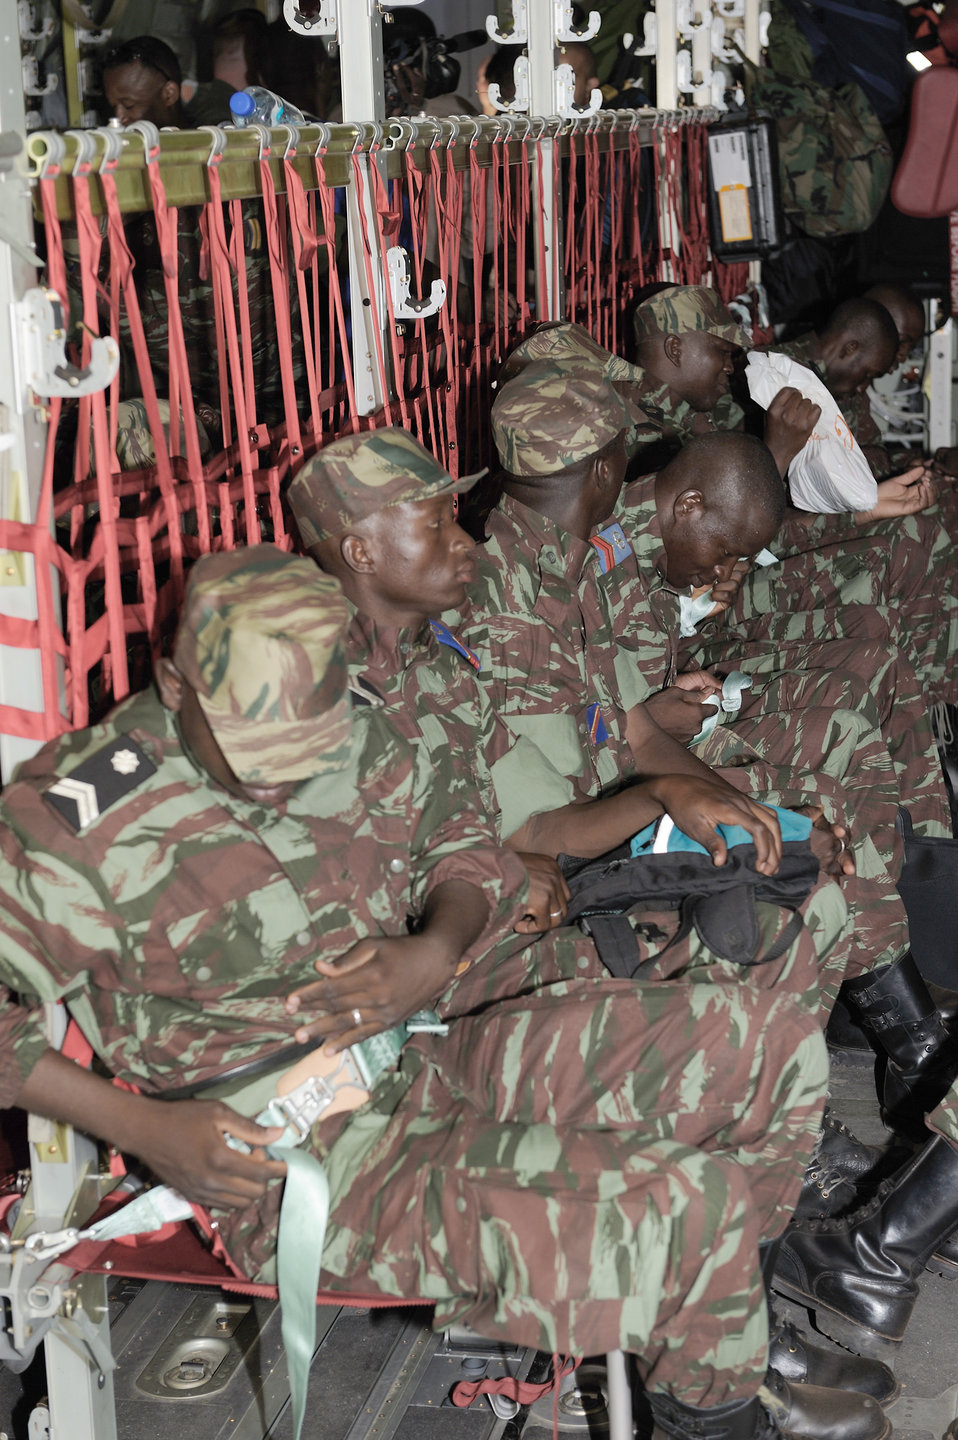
Airmen support Air Forces Africa in exercise

Burkinabe army soldiers buckle themselves into a C-130J Super Hercules to begin their deployment to Mali in support of Exercise Flintlock 10 May 1, 2010, in Ouagadougou, Burkina Faso. The C130-J is deployed from Ramstein Air Base, Germany.